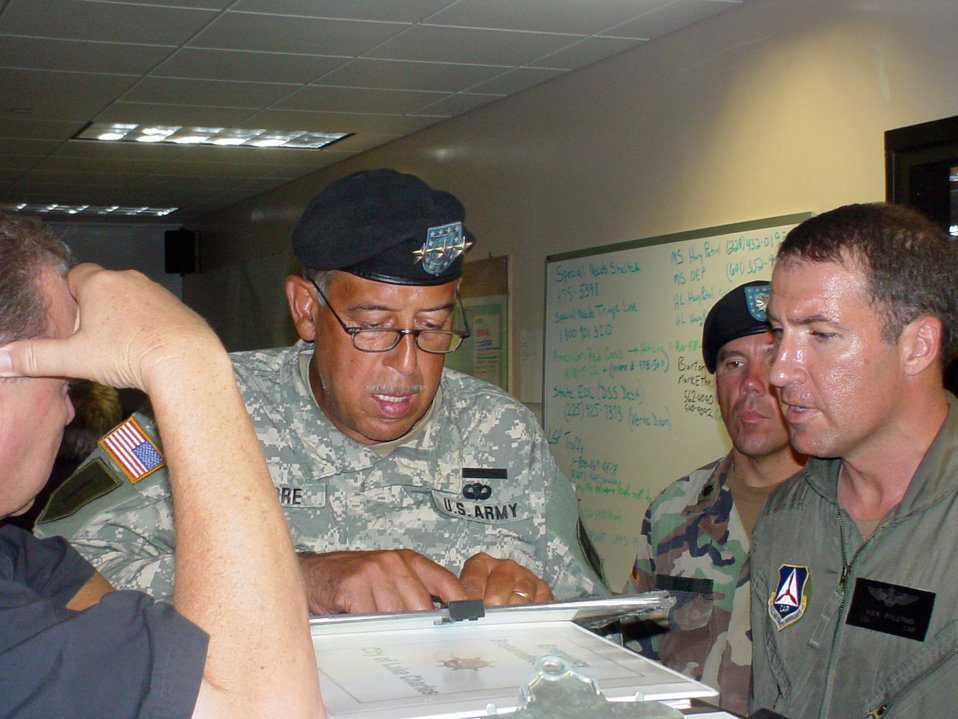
CAP helps hurricane relief efforts

Dick Gremillion, Army Lt. Gen. Russel L. Honori and Civil Air Patrol Col. Rock Palermo discuss hurricane relief efforts at the operations center in Lake Charles, La. After Hurricane Rita, Colonel Palermo spent nearly three weeks directing local emergency operations in his hometown of Lake Charles. He was drafted as operations section chief and later deputy director because of his past disaster management experience.